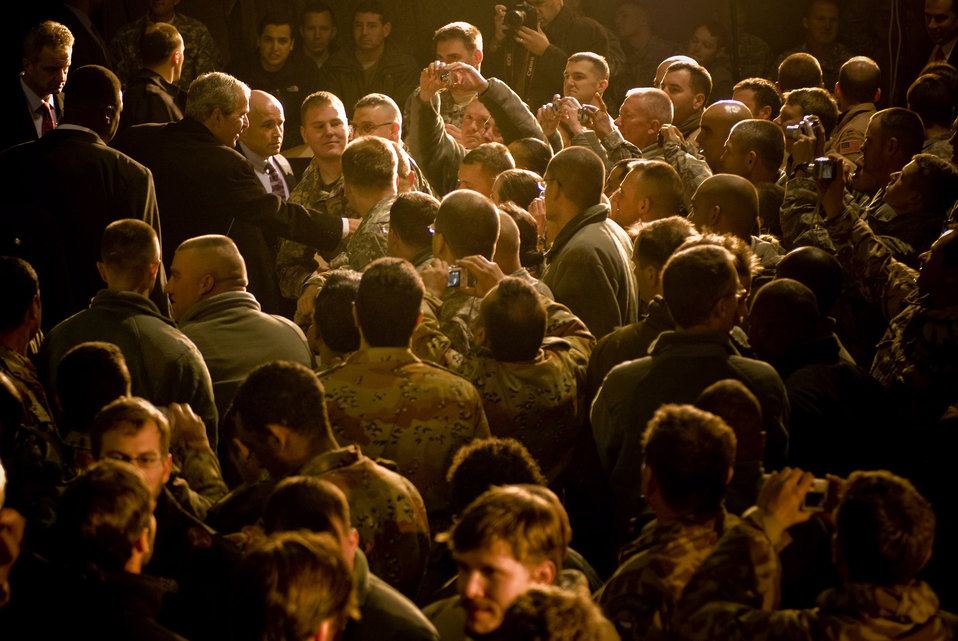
President Bush visits troops in Bagram

President George W. Bush shakes hands with troops gathered Dec. 15 at Bagram Airfield, Afghanistan.